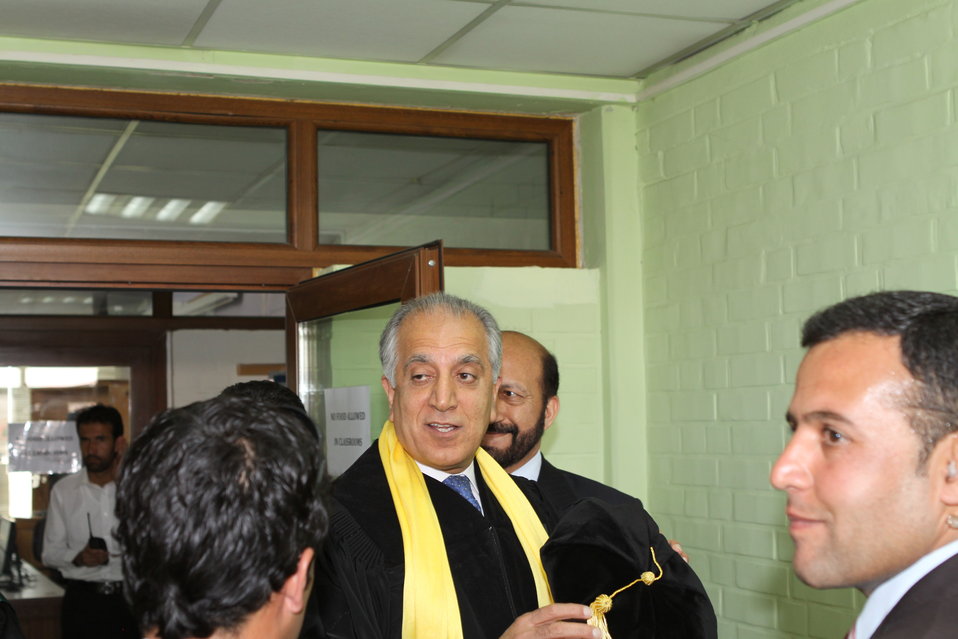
100526 AUAF Graduation 076